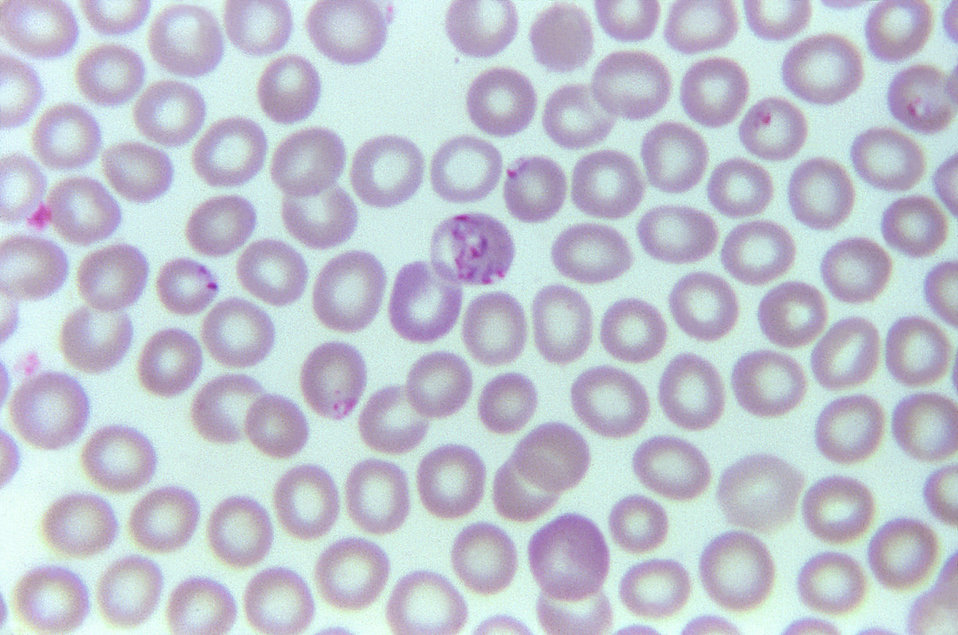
Blood smear showing Babesia spp. rings with basophilic stippling within the erythrocytes.